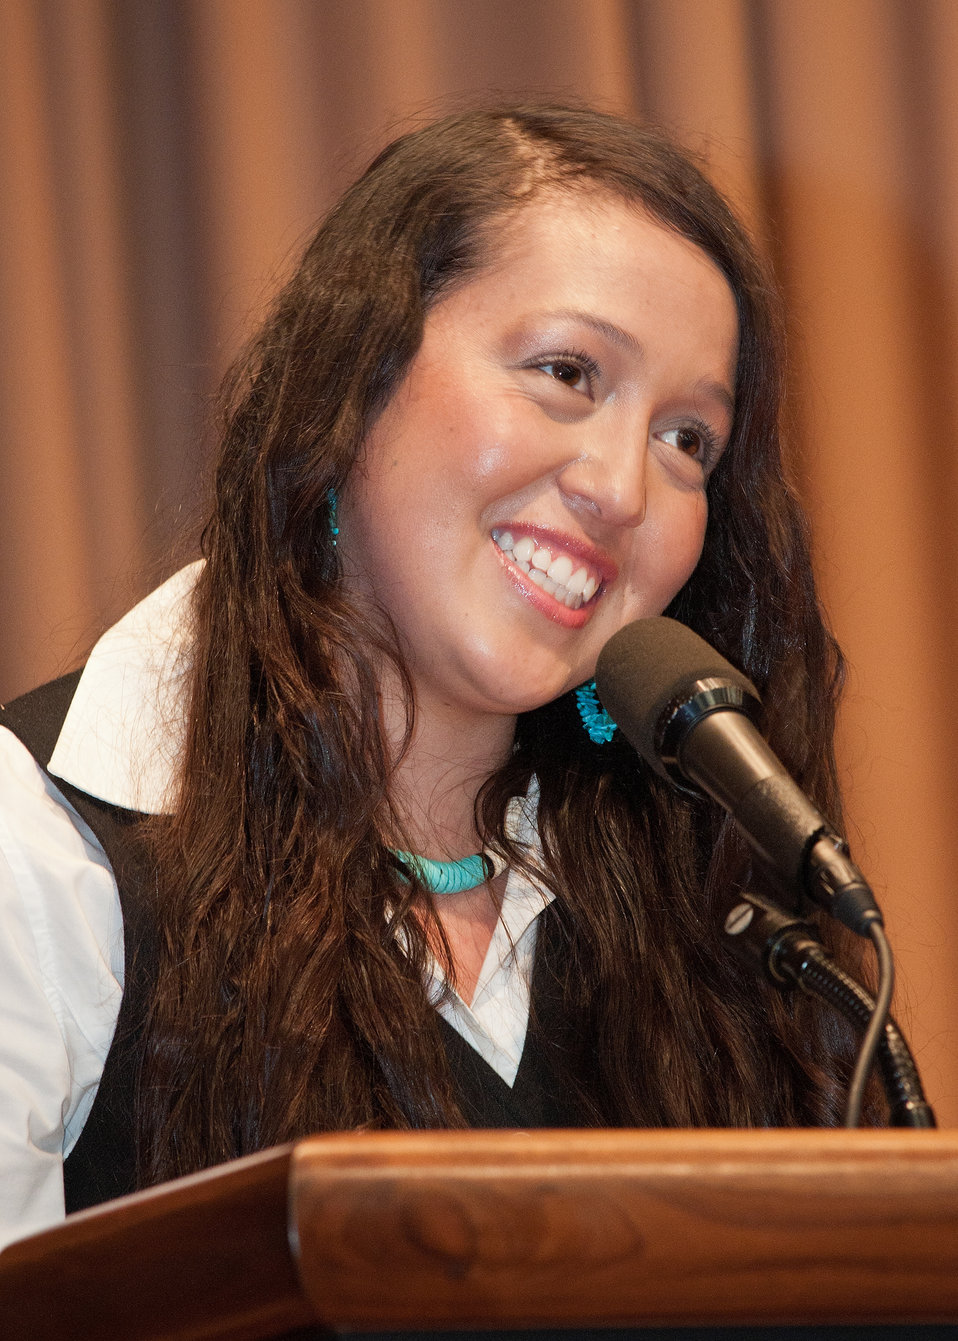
20111116-OHRM-RBN-Nat.Am.Ind.Heritage

Odessa Oldham, Casper College, Casper, Wyoming explained her knowledge and experience as a member of the Future Farmer’s of America during the United States Department of Agriculture, Native American Indian Heritage Month celebration in Washington, DC, on Wednesday, November 16, 2011, The theme of this year’s event is, “Native Youth: Cultivating the Future.”